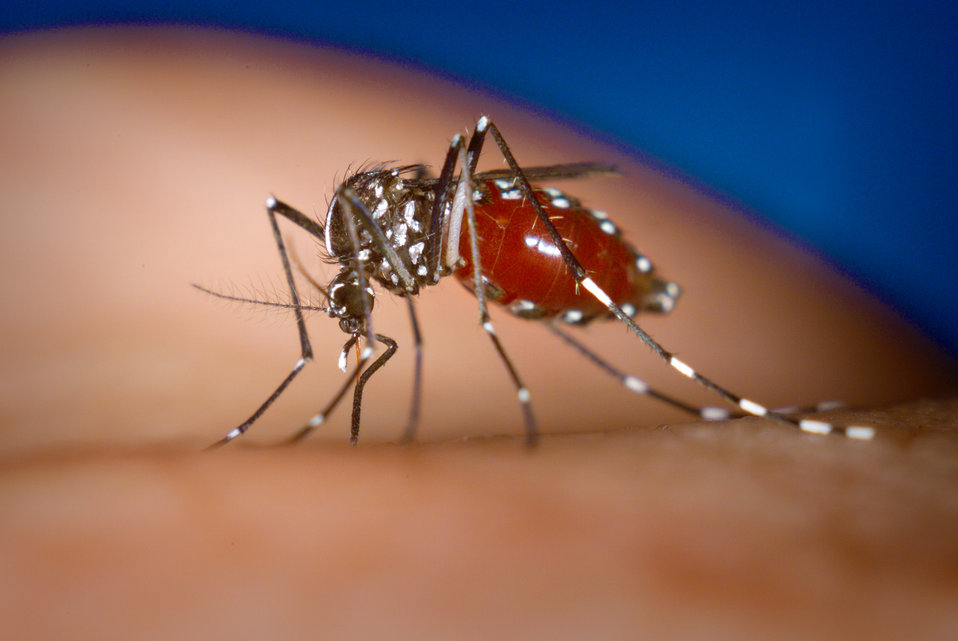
This image depicts an Aedes albopictus female mosquito feeding on a human host.